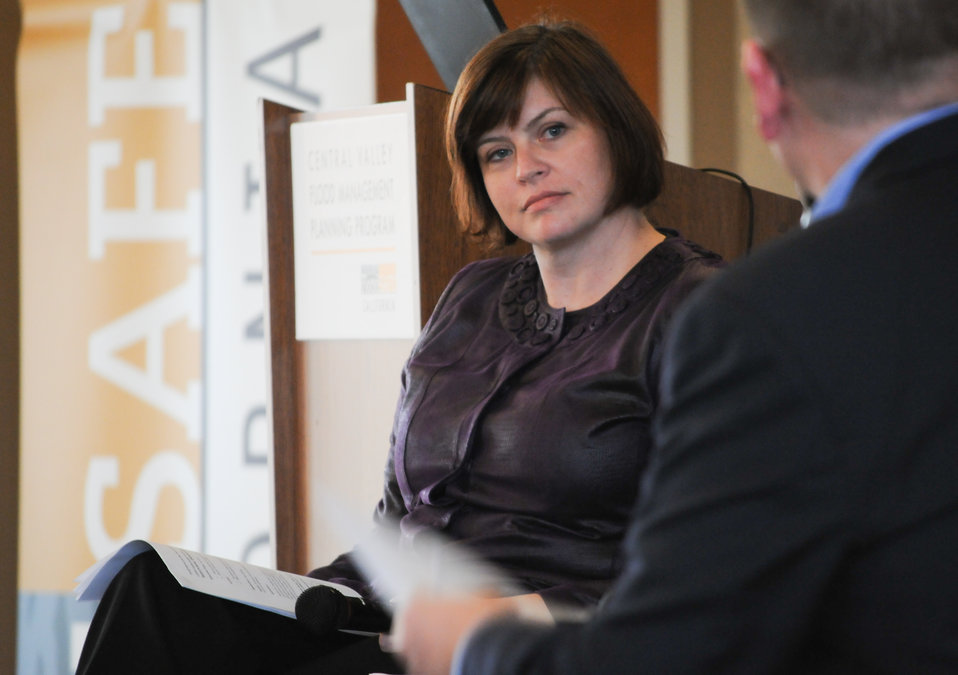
WEST SACRAMENTO, Calif. (Dec. 9, 2010) – U.S. Army Corps of Engineers Sacramento District’s Alicia Kirchner addresses questions about the Corps’ Central Valley Integrated Flood Management Study at the California Department of Water Resources’ Valleywide Forum here Dec. 9, a public meeting to detail progress on California’s Central Valley Flood Protection Plan. Both California’s and the Corps’ plans aim to develop a sustainable flood risk reduction system in California’s Central Valley.